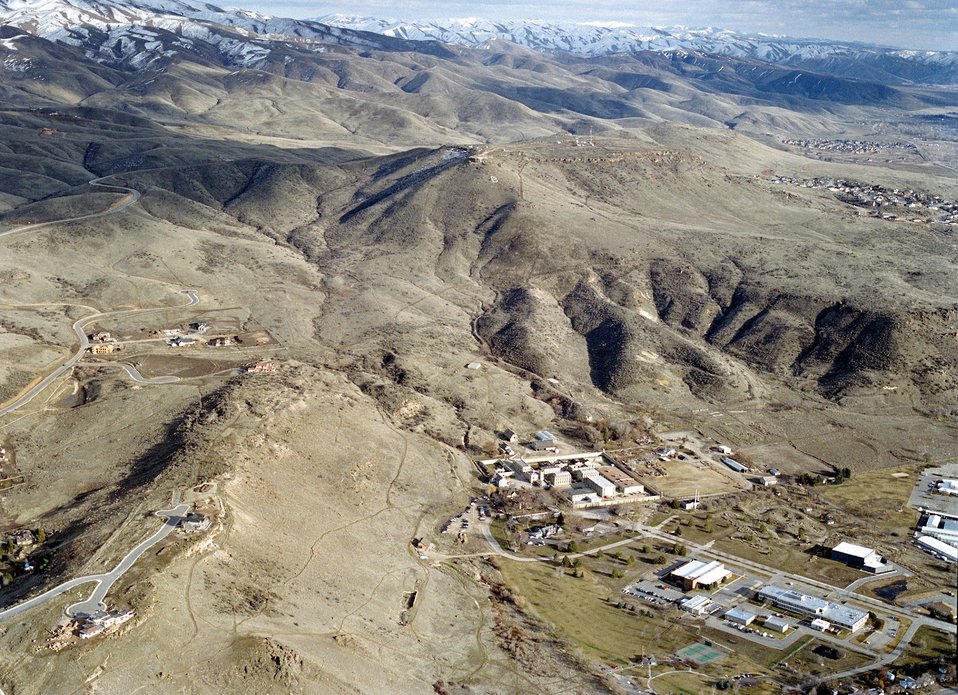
Recreation on the Boise Front Foothills Aerial Four Rivers Field Office LSRD Lower Snake River District